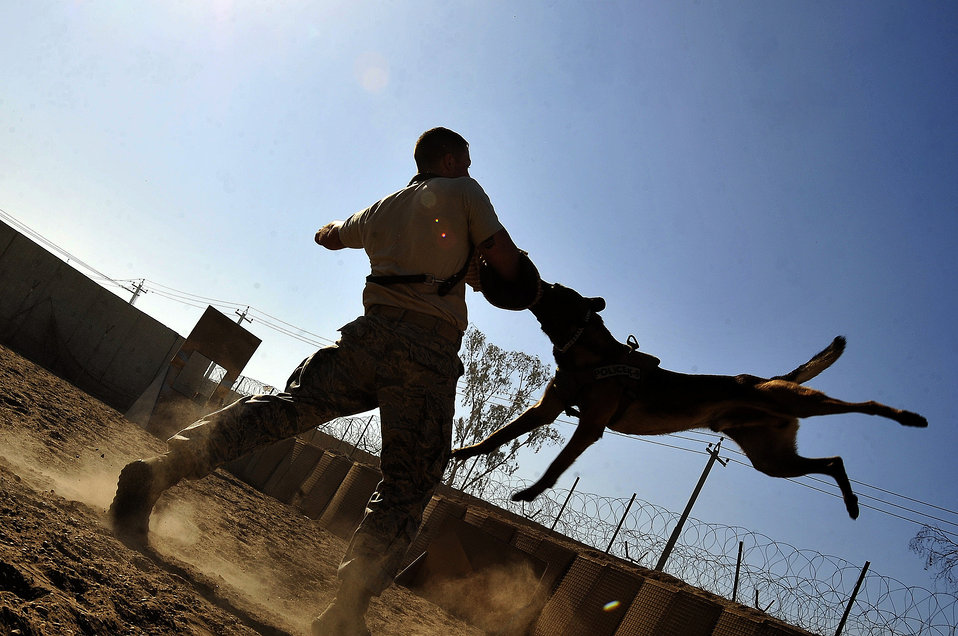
Attack!

Rambo, a patrol and explosive detector dog assigned to the 447th Expeditionary Security Forces Squadron, attacks Senior Airman Stephen Hanks while training on an obstacle course Dec. 9, 2011, in Baghdad, Iraq. For the last six months Rambo and Hanks, have been supporting Operation New Dawn by providing explosive and psychological deterrence. Hanks is a 447th ESFS military working dog handler,